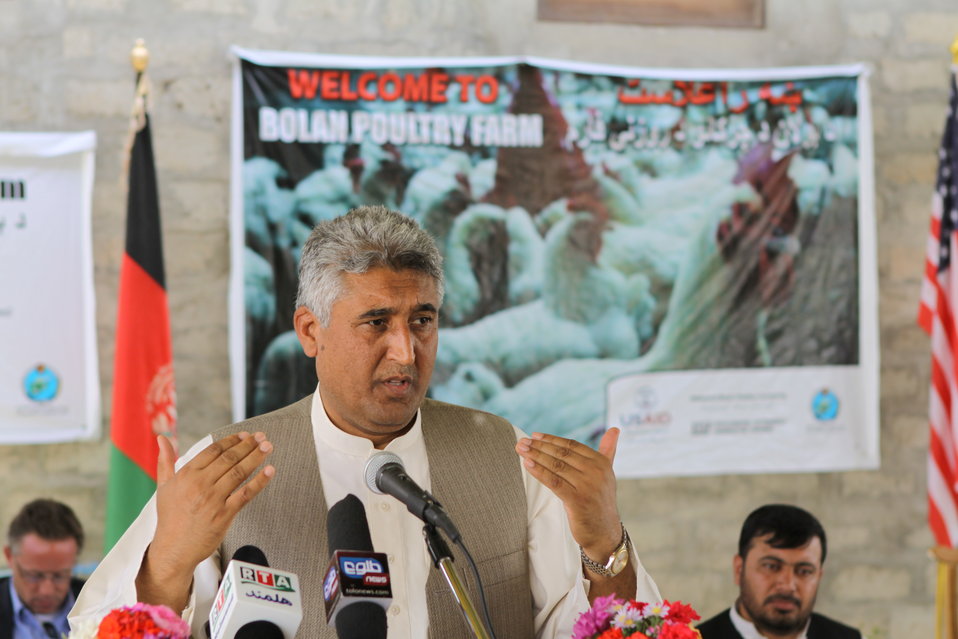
Bolan Poultry Farm